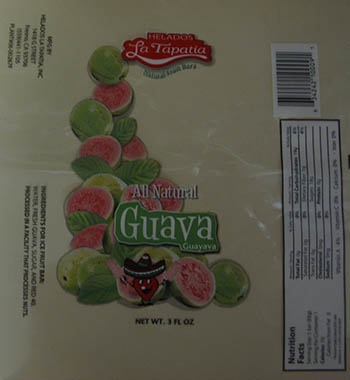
RECALLED – Ice cream products

March 19, 2014 – Product Recall – Helados La Tapatia, Inc. Recalls Products Because of Possible Health Risk.